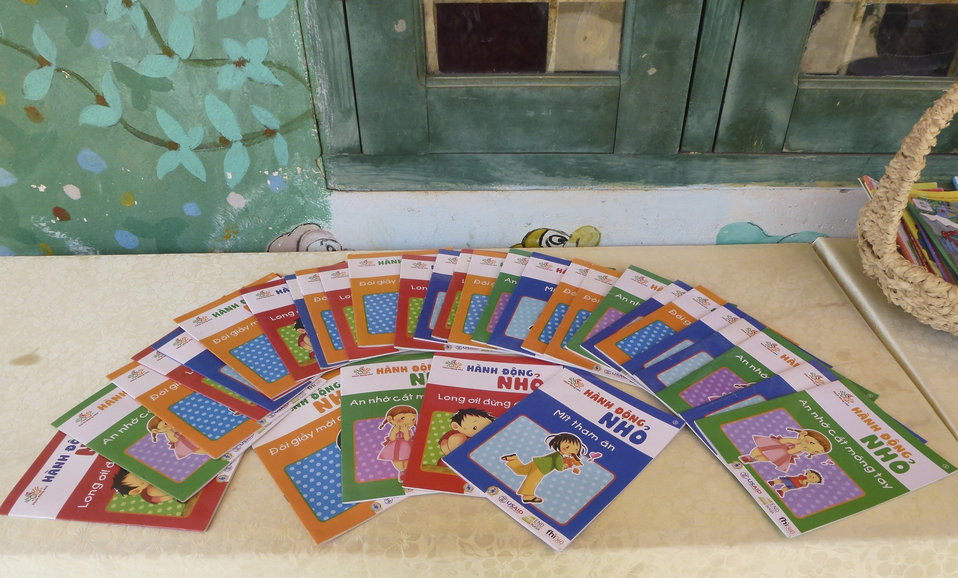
USAID supports deworming medication for school children in Sa Pa district of Lao Cai province

May 13, 2014.